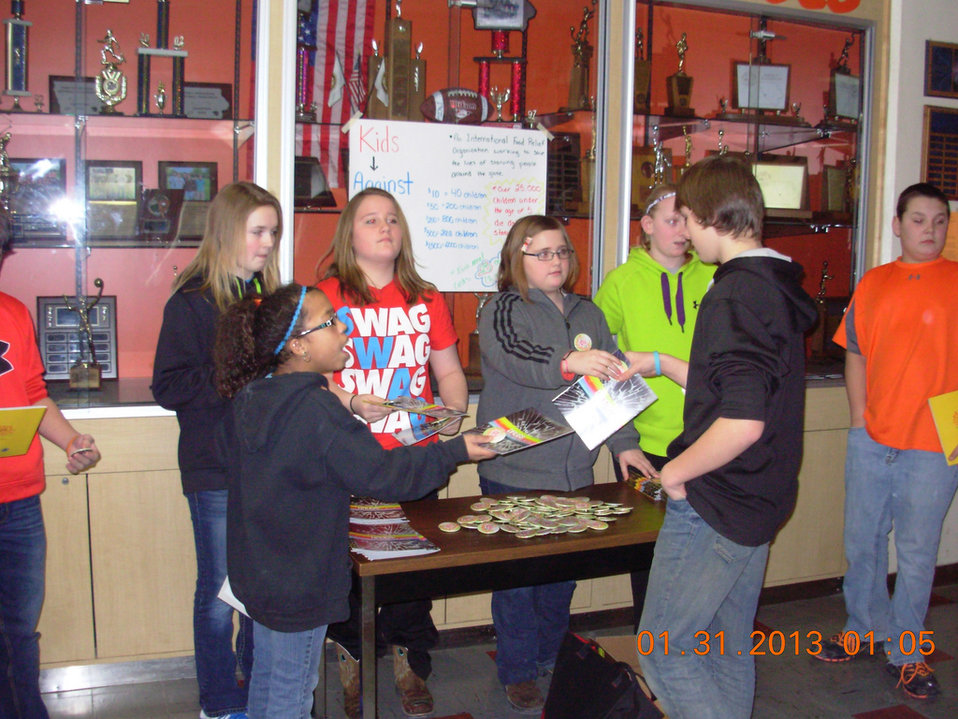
Iowa's SAFE Coalition, NDFW 2013

Van Buren County, IA. SAFE Coalition high school student run groups fighting issues of drug, alcohol, and tobacco abuse during NDFW 2013.